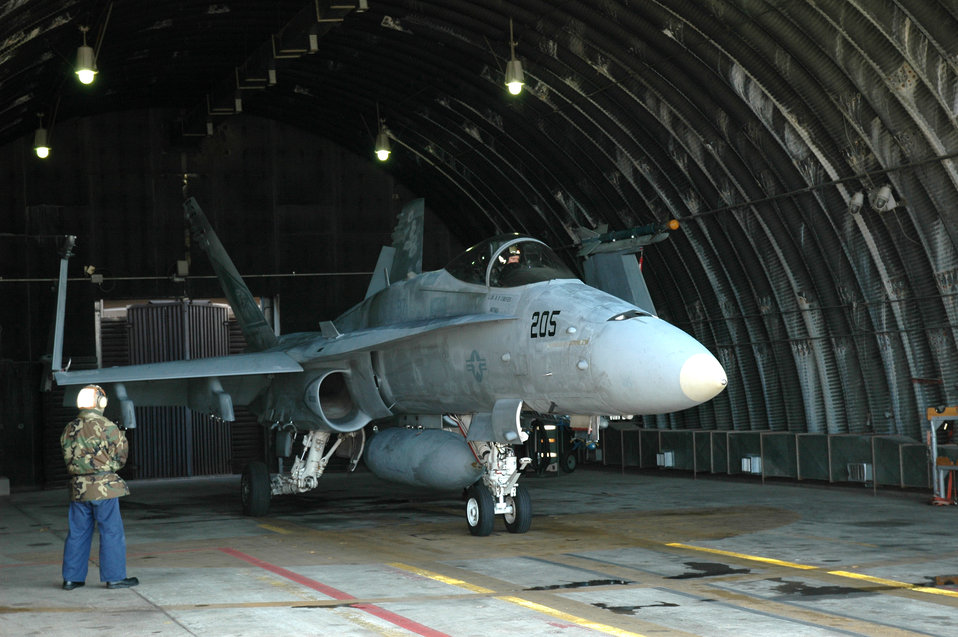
Hornets swarm Osan

OSAN AIR BASE, South Korea -- A Navy F/A-18 Hornet gets ready to taxi here. Two Navy Hornet squadrons are visiting Osan for a joint training exercise with local F-16 Fighting Falcon and A-10 Thunderbolt II units.